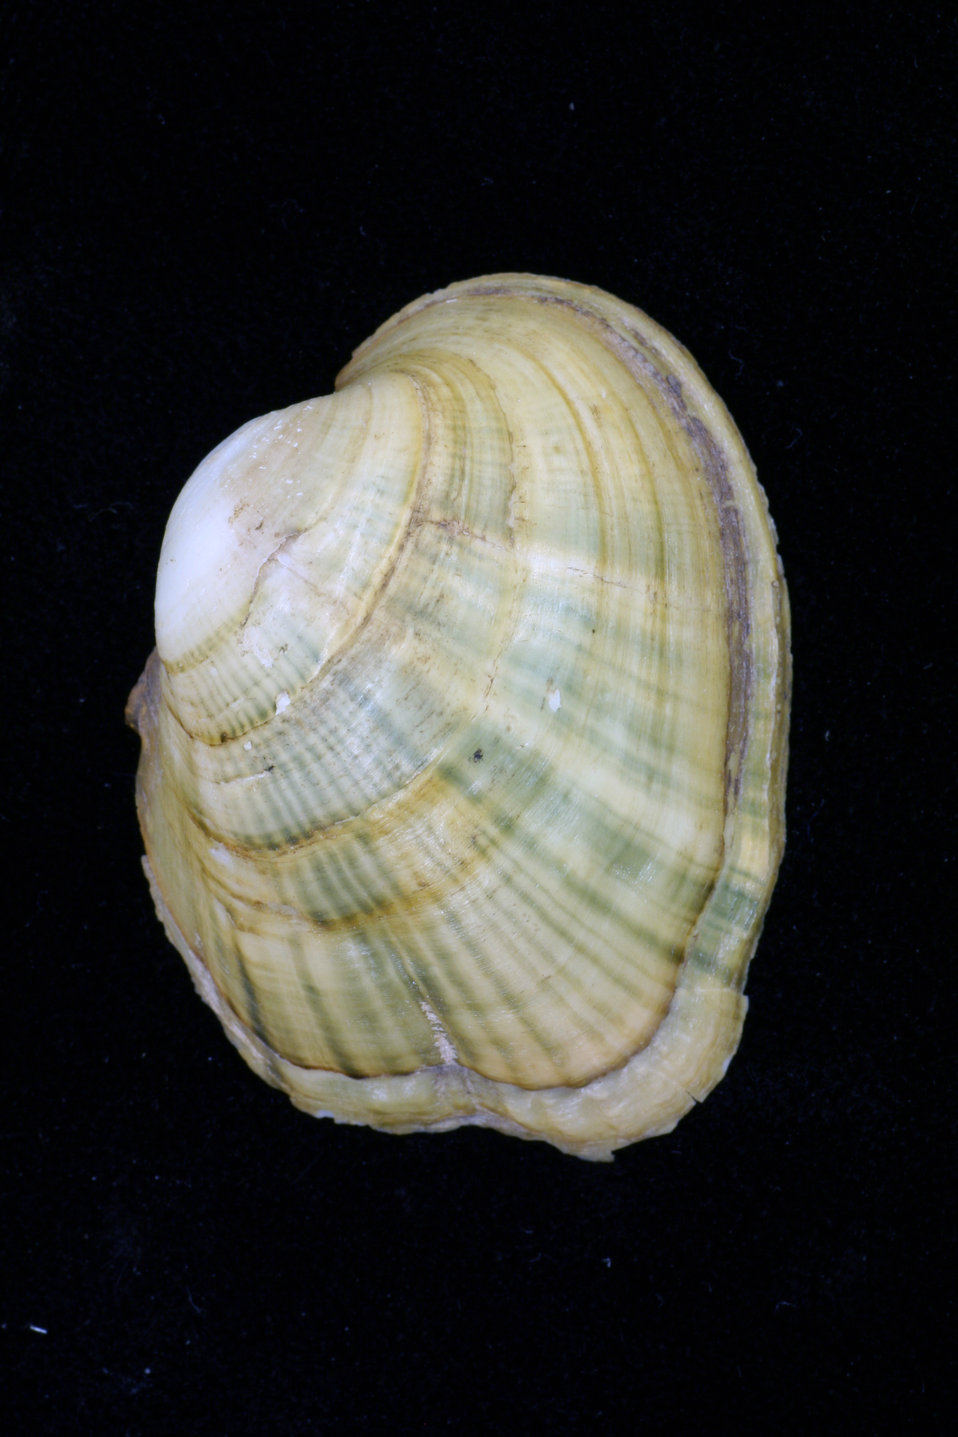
White catspaw pearlymussel (Epioblasma obliquata perobliqua)

USFWS Headquarters
Status: Endangered